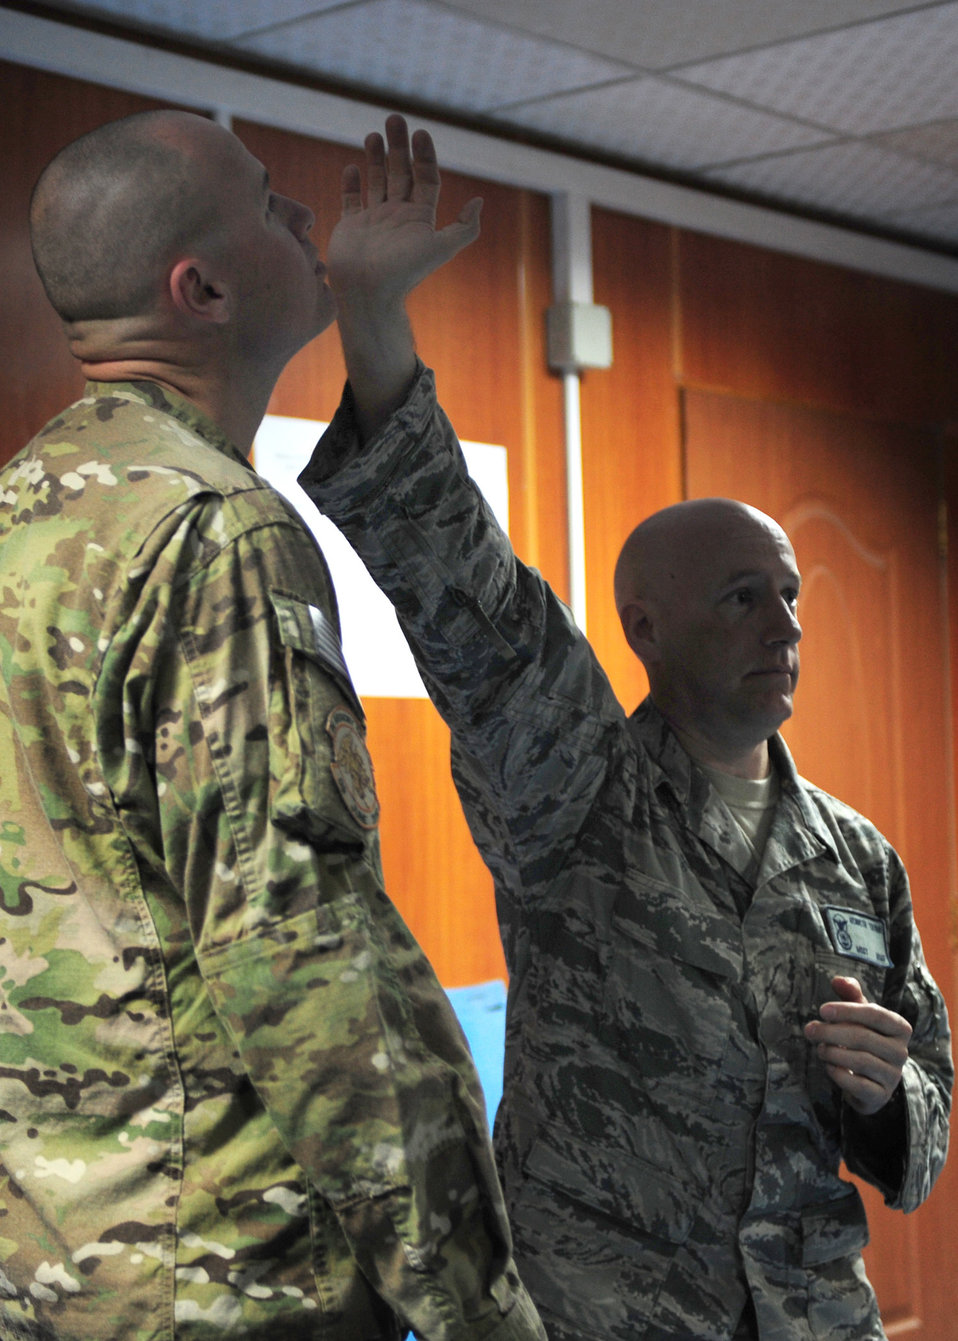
U.S. advisors teach self-defense to Afghan Air Force women

Both advisors with the 738th Air Expeditionary Advisory Squadron, Pohantoon-e-Hawayee security forces advisors and self-defense instructors, U.S. Air Force Master Sgt. Kenneth Tatrai and Tech. Sgt. James Hargrove demonstrate a basic strike move to female Afghan Air Force personnel during a women's self-defense class at Kabul International Airport, Afghanistan, Feb. 29, 2012. The training was held to prepare the students physically and mentally for what they may experience if placed in a dangerous scenario.